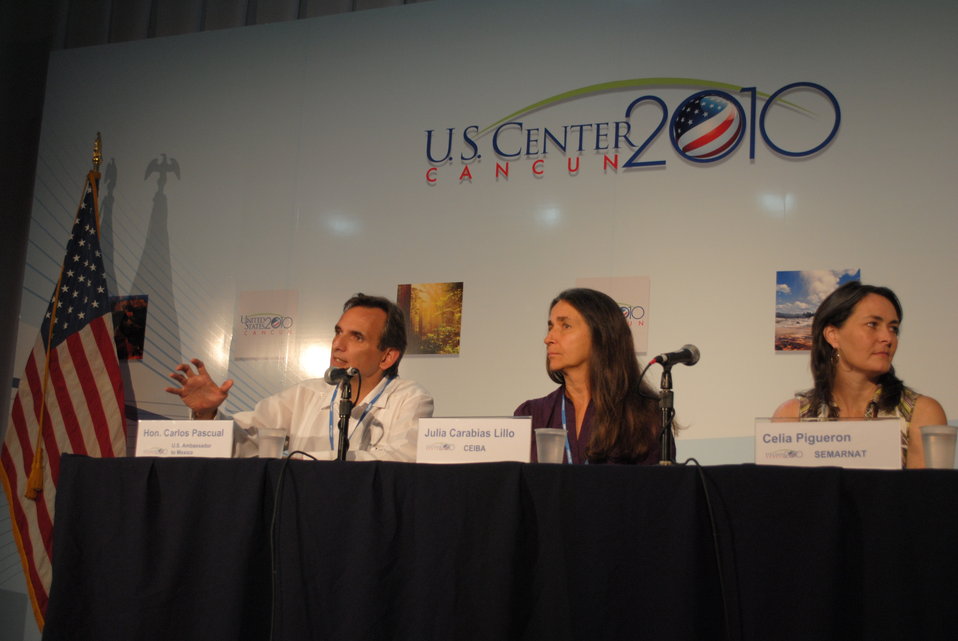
Ambassador Pascual responds to a question during the U.S. and Mexico Bi-National Cooperation on Climate Change and Development panel at the U.S. Center at COP-16 in Cancun, Mexico, on December 8, 2010.